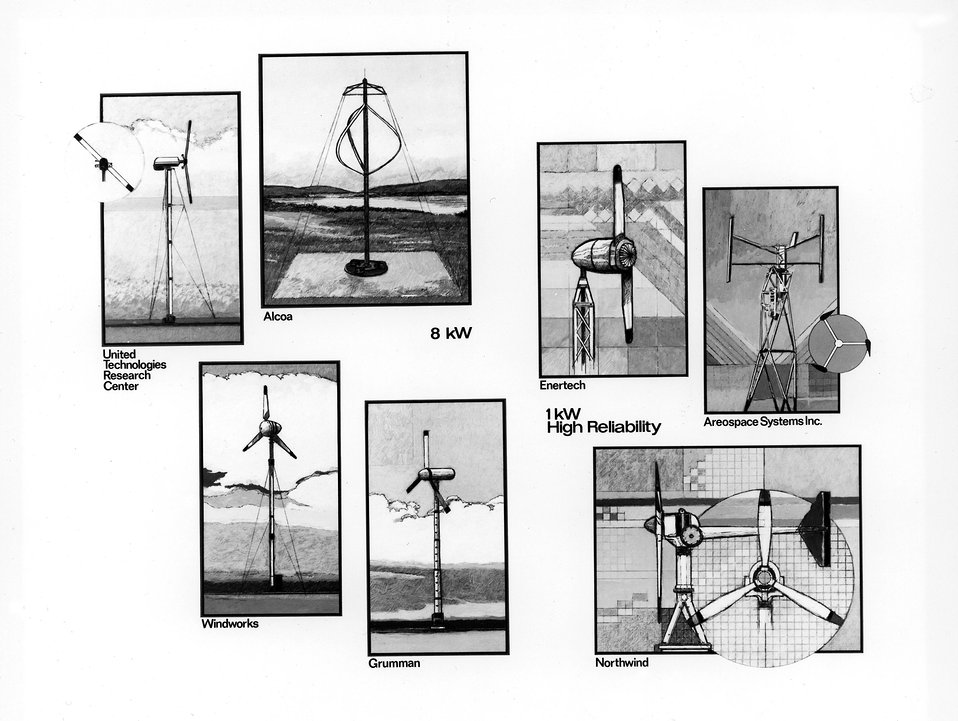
Prototype small wind energy conversions systems are being designed and built by seven U.S. companies for the Department of Energy. c. 1978